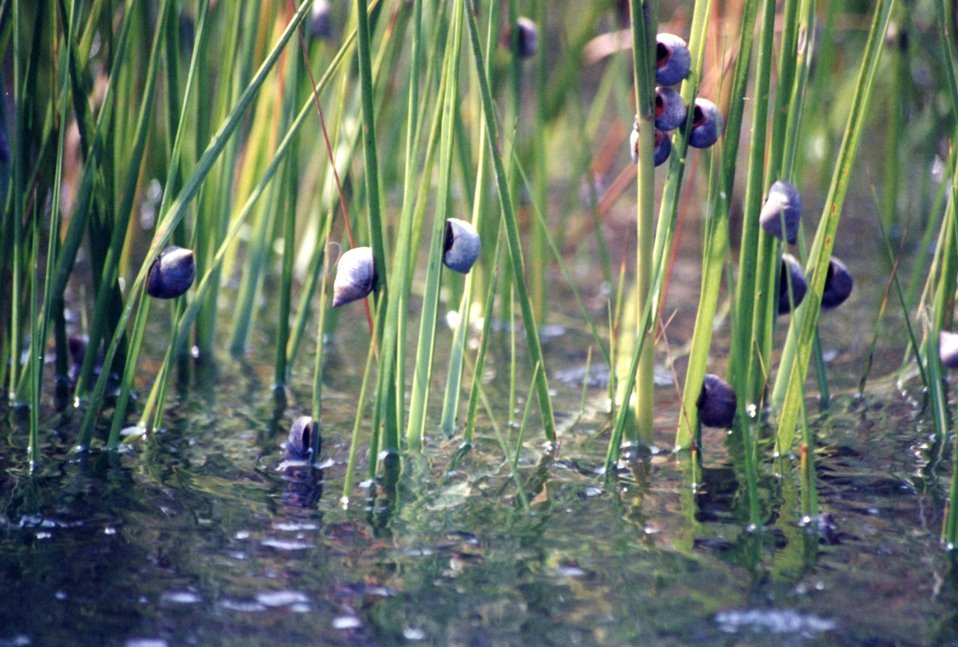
Marsh periwinkle, Littorina littorina, on marsh grass.